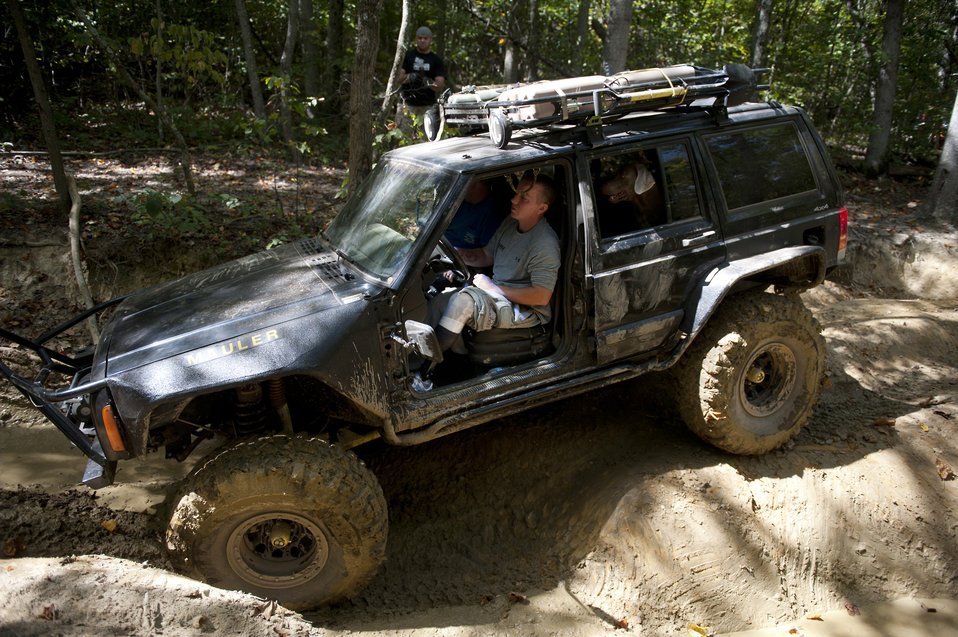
Wounded Warrior Care

Army Sgt. James Nickelson navigates a jeep through rough terrain while Murphy looks out a window during an off-road event in Gore, Va., Sept. 15, 2012. Nickelson is assigned to Battle Company, Warrior Transition Battalion, Bethesda, Md.